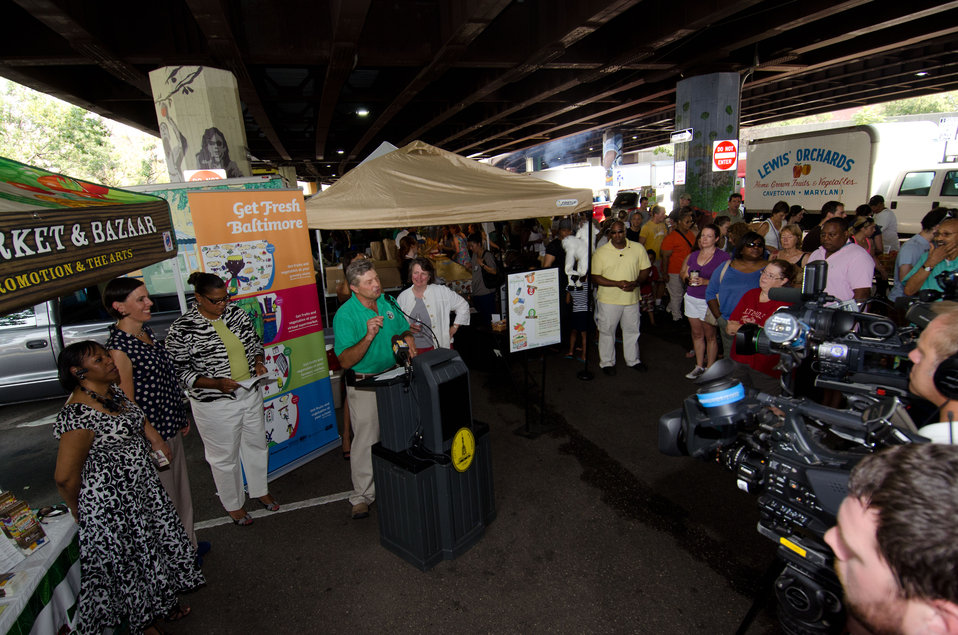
Maryland Department of Agriculture Secretary Earl F. (Buddy) Hance, helped launch the Baltimore Farmers' Market and Bazaar’s use of SNAP (Supplemental Nutrition Assistance Program) benefits, Baltimore Bucks, and debit card through a wireless connection, in Baltimore, MD, on Sunday, July 8, 2012. Baltimore Mayor Stephanie Rawlings-Blake lead the event with other partners U.S. Department of Agriculture, Kaiser Permanente of the Mid-Atlantic States, Abell Foundation, the Harry and Jeanette Weinberg Foundation, the Baltimore Community Foundation, Maryland Hunger Solutions, the Maryland Department of Agriculture Baltimore Office of Promotions and the Arts, and Department of Social Services, who support progressive actions that improve access to healthy food and support local farmers.